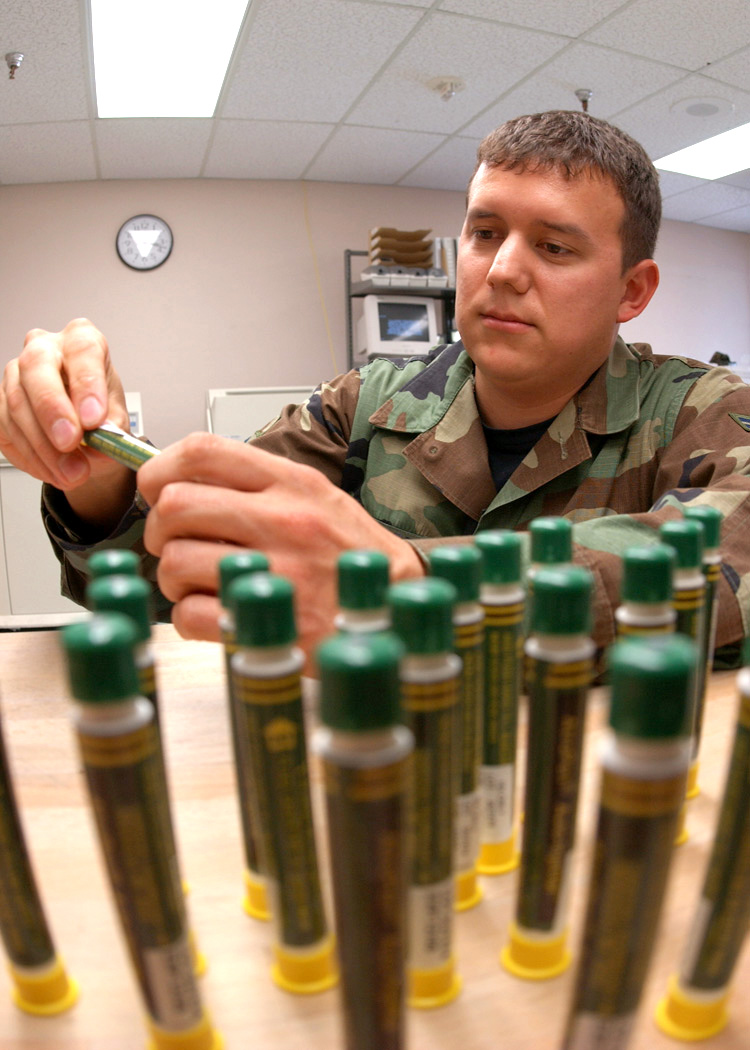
Running some tests

EIELSON AIR FORCE BASE, Alaska -- Airman 1st Class Scott Davis labels atropine auto-injectors for the shelf life extension program here. He is a medical logistics technician with the 354th Medical Support Squadron.